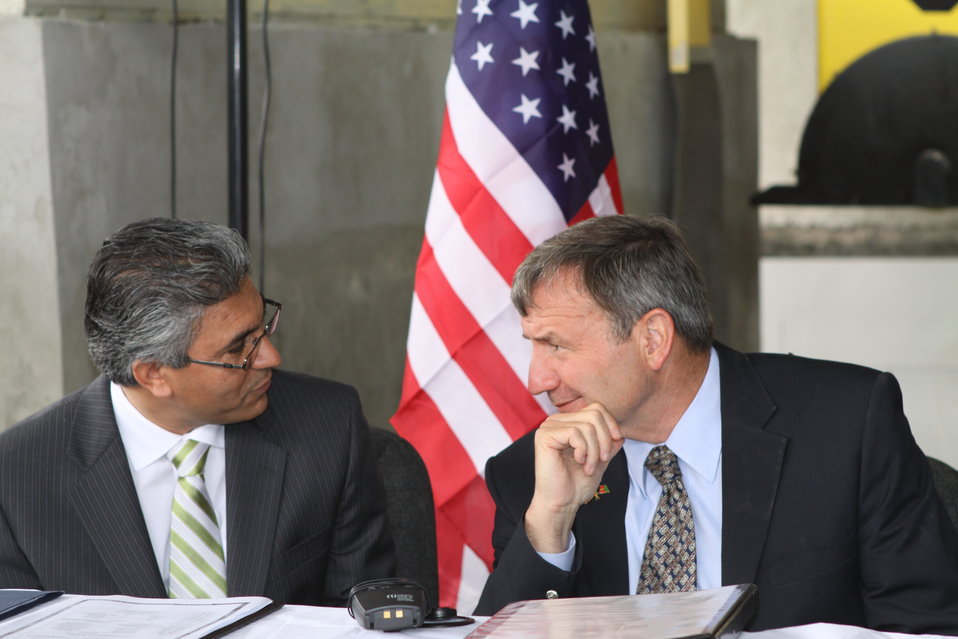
100525 Hirat Marble Conference 129